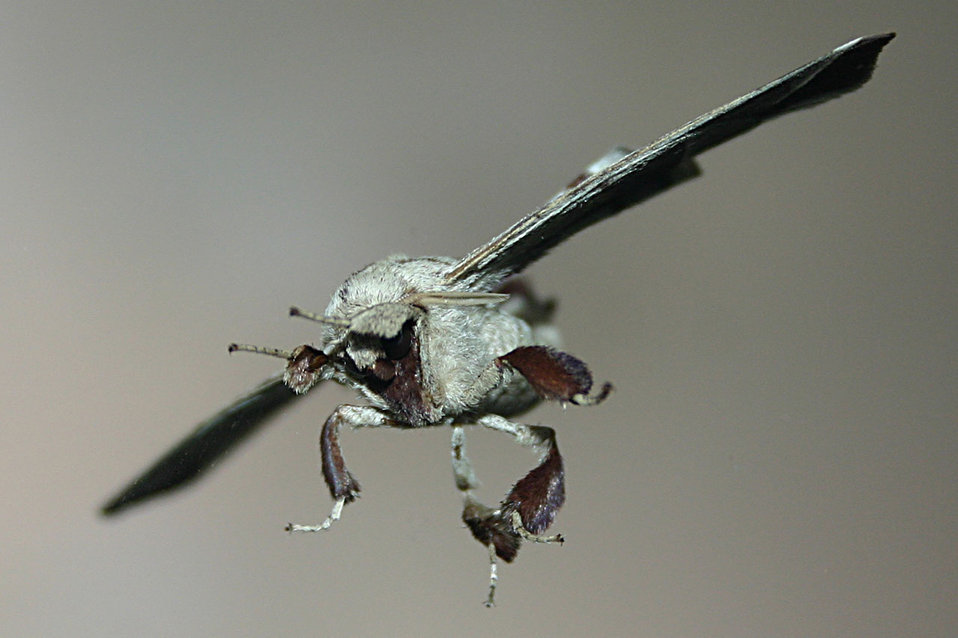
August moth on glass

Moth on car windshield, from inside the car.